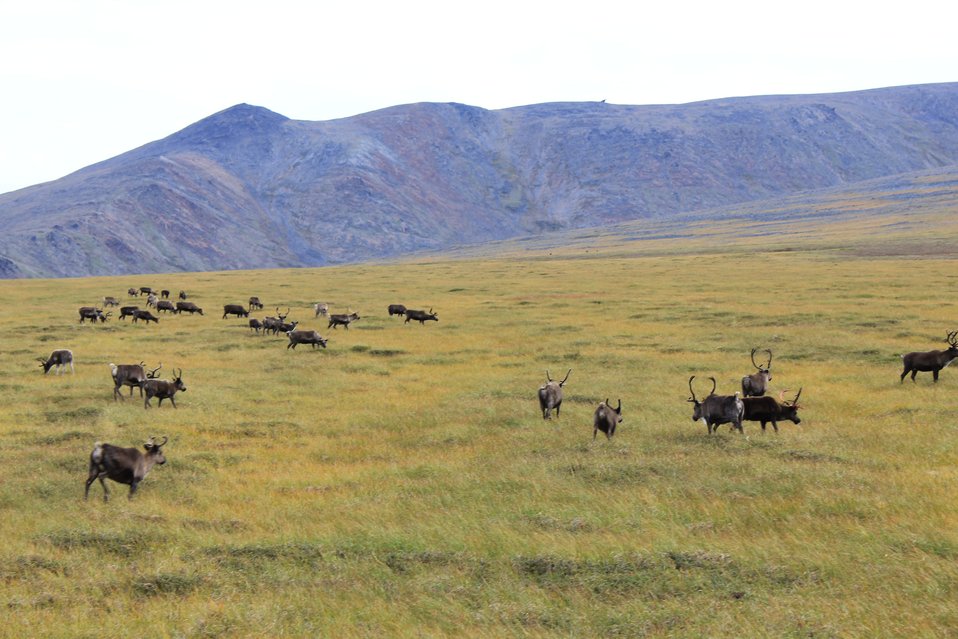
Domestic reindeer herd